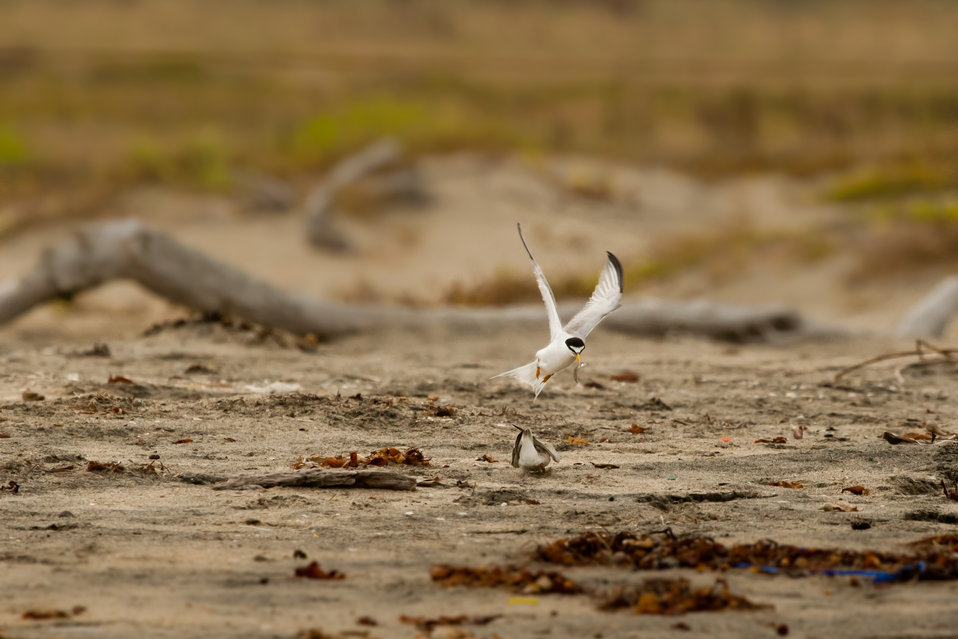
Feeding time!

An adult California Least tern brings a fish to it's begging chick, who a few weeks old